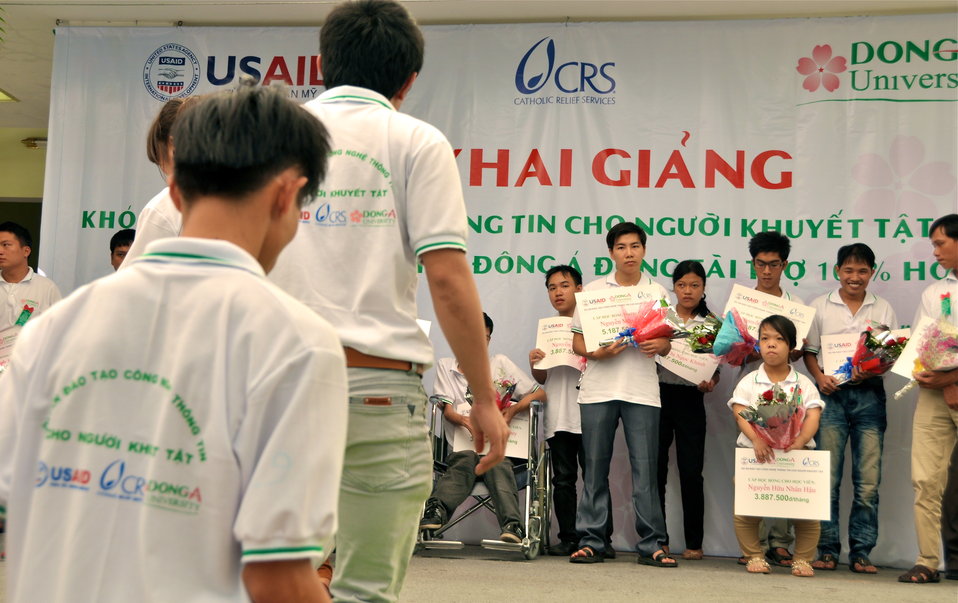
New class of students starts at Dong A Univeristiy with support from USAID and CRS

Photo: @USAIDVietnam
December 3, 2012